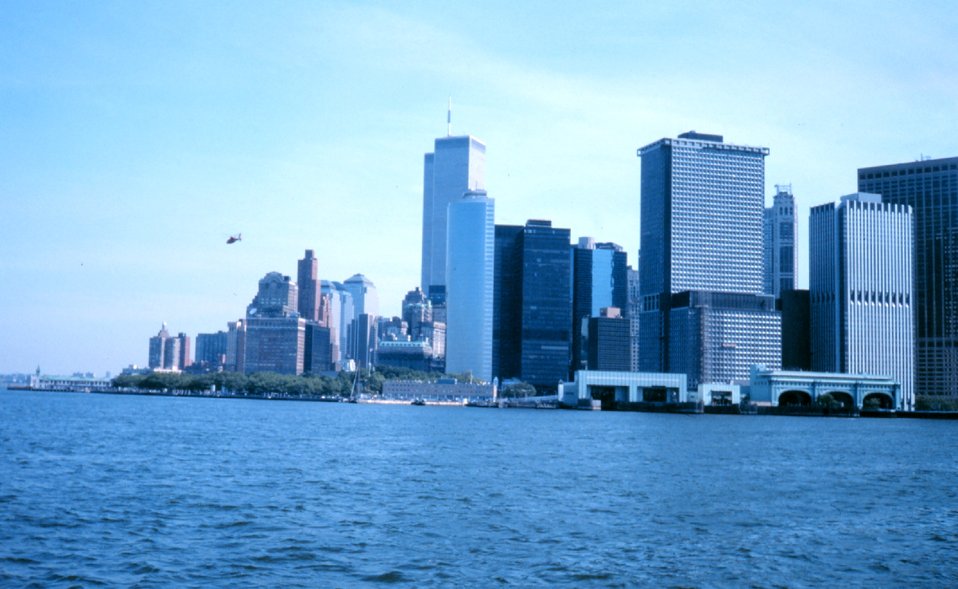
The World Trade Center and part of the New York skyline as seen from the Governor's Island Ferry. The ferry terminals are in the right lower center of the photo.